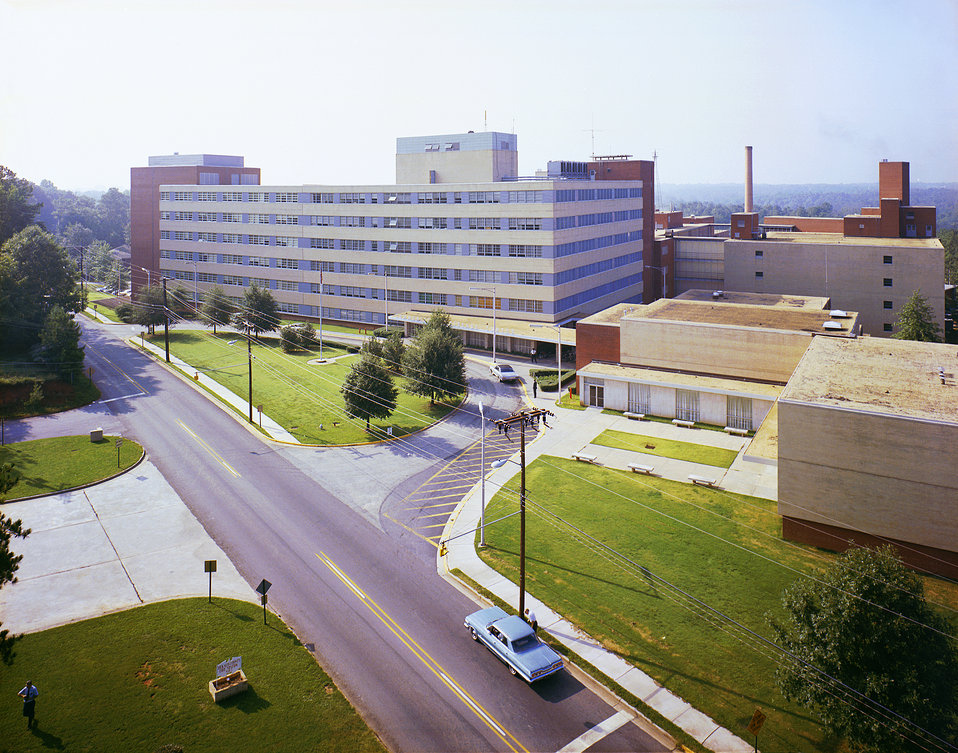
This historic aerial view depicts the appearance of the Centers for Disease Control and Prevention's (CDC) geographic presence in 1969.